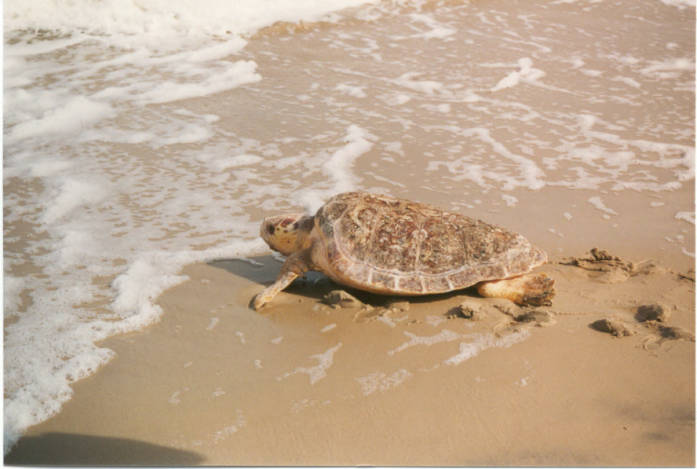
female loggerhead sea turtle

Back Bay National Wiildlife Refuge, VA